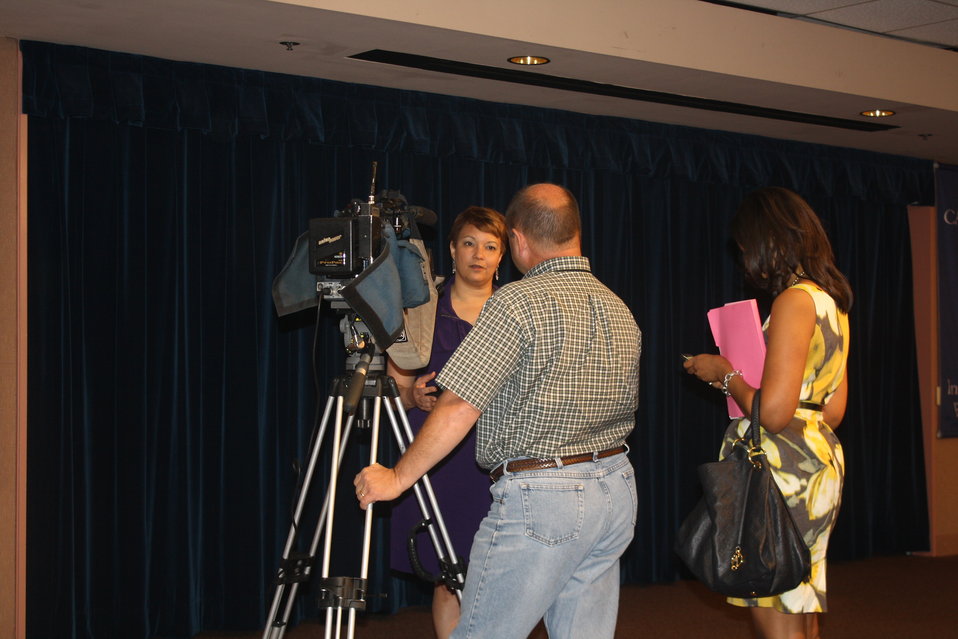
Faith-Based and Neighborhood Partnership launch at Atlanta's Carter Center